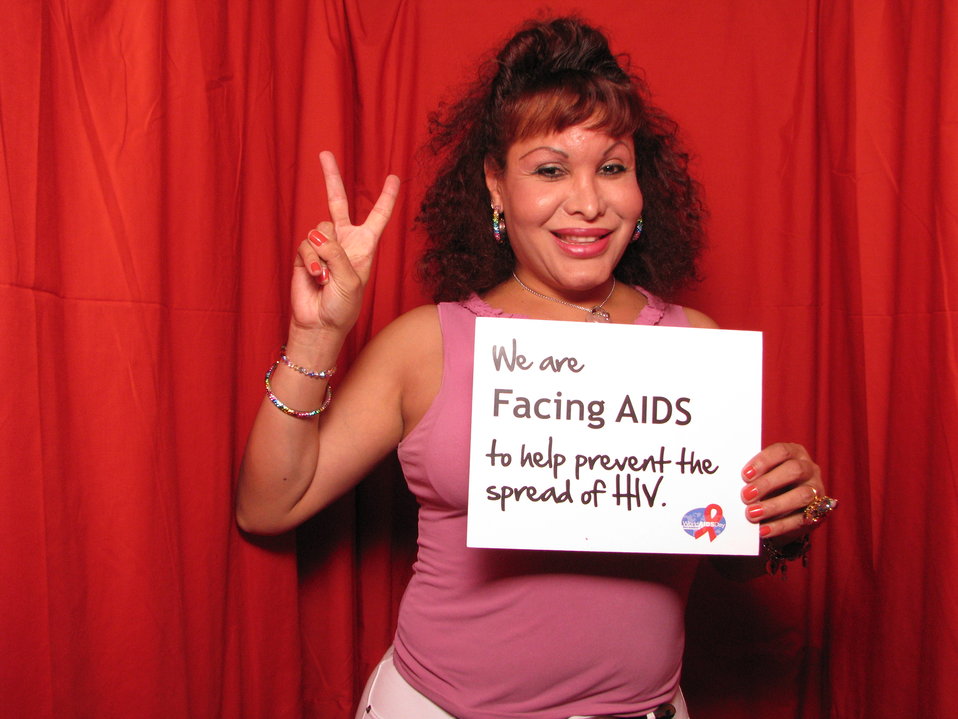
We are FACING AIDS to help prevent the spread of HIV.

From the AIDS.gov photo booth at the U.S. Conference on AIDS, September 2010 (Orlando, FL).